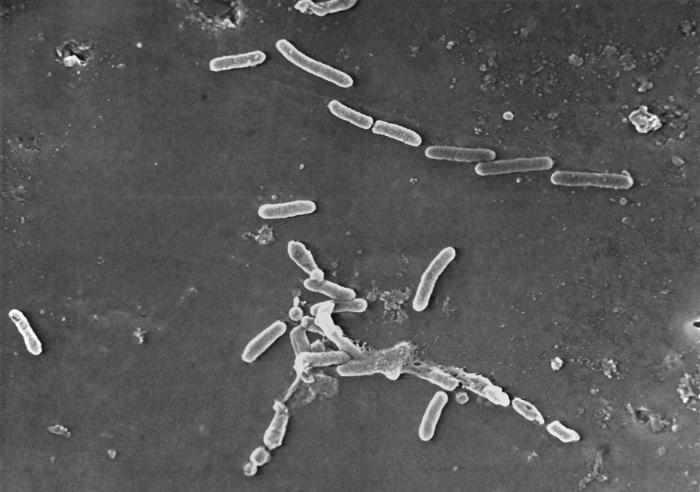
Scanning electron micrograph (SEM) of Pseudomonas aeruginosa bacteria.